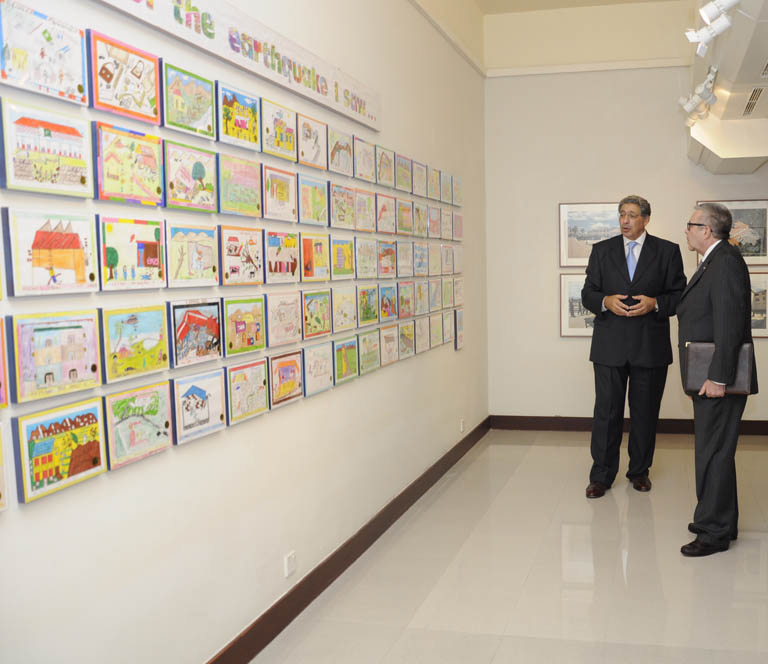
Photography and Drawing Exhibition on Pakistan 2005 Earthquake “Rebuilding Together: With Dignity and Hope”

Ambassador Richard Hoagland, Deputy Chief of Mission at U.S. Embassy Islamabad along with Tarik Selim, Chief of Party, USAID Pakistan Earthquake Reconstruction and Rehabilitation Program visit a photo exhibition 'Rebuilding Together: With Dignity and Hope' sponsored by USAID at Pakistan National Council of Arts (PNCA) in Islamabad.